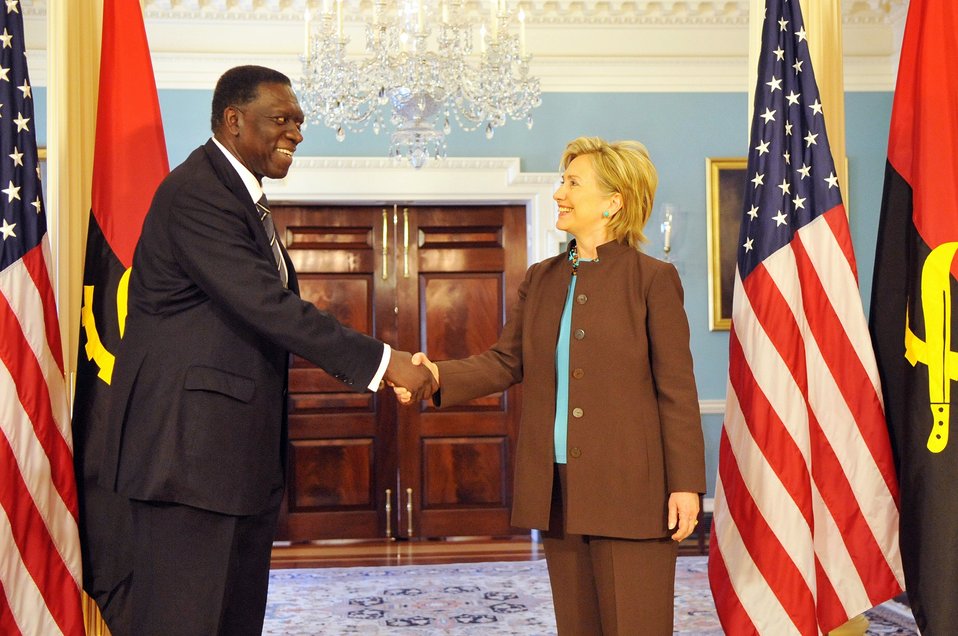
Secretary Clinton Meets With Angolan Minister of External Affairs

U.S. Secretary of State Hillary Rodham Clinton hosts a bilateral meeting with Angolan Minister of External Affairs Ansuncao Afonso dos Anjos in the Treaty Room of the U.S. Department of State in Washington, DC May 21, 2009.